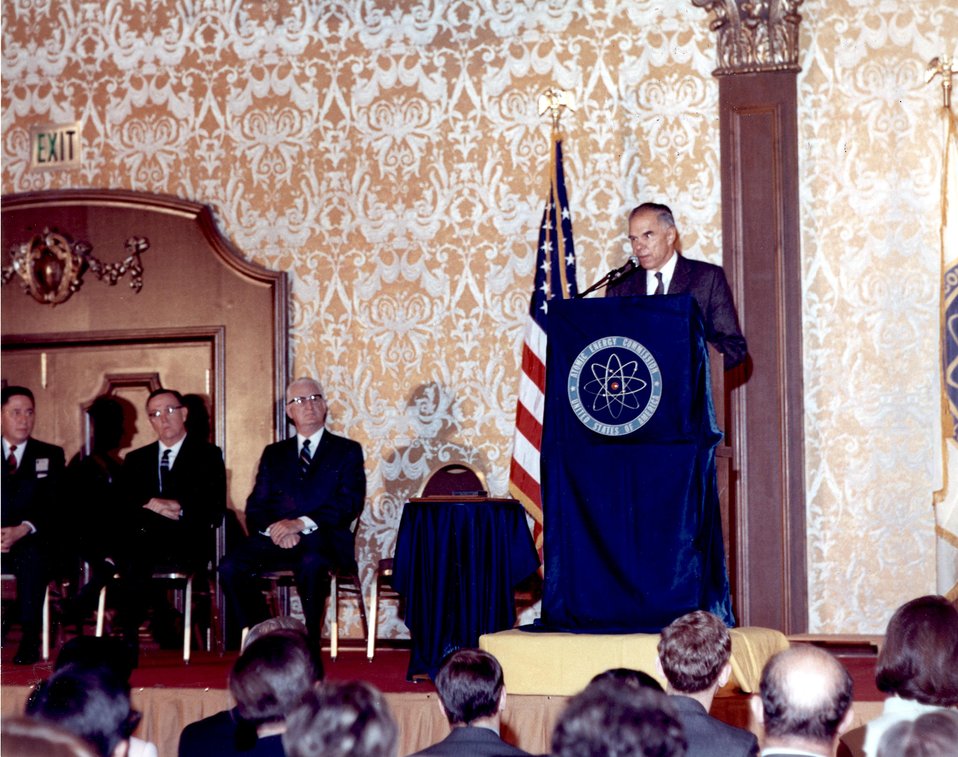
Enrico Fermi Award Ceremony. Imperial Ballroom. San Fransisco Hilton Hotel. 5:30 p.m., December 2, 1969. Fermi Award. Recipient: Walter Zinn. Date: Dec. 2, 1970.